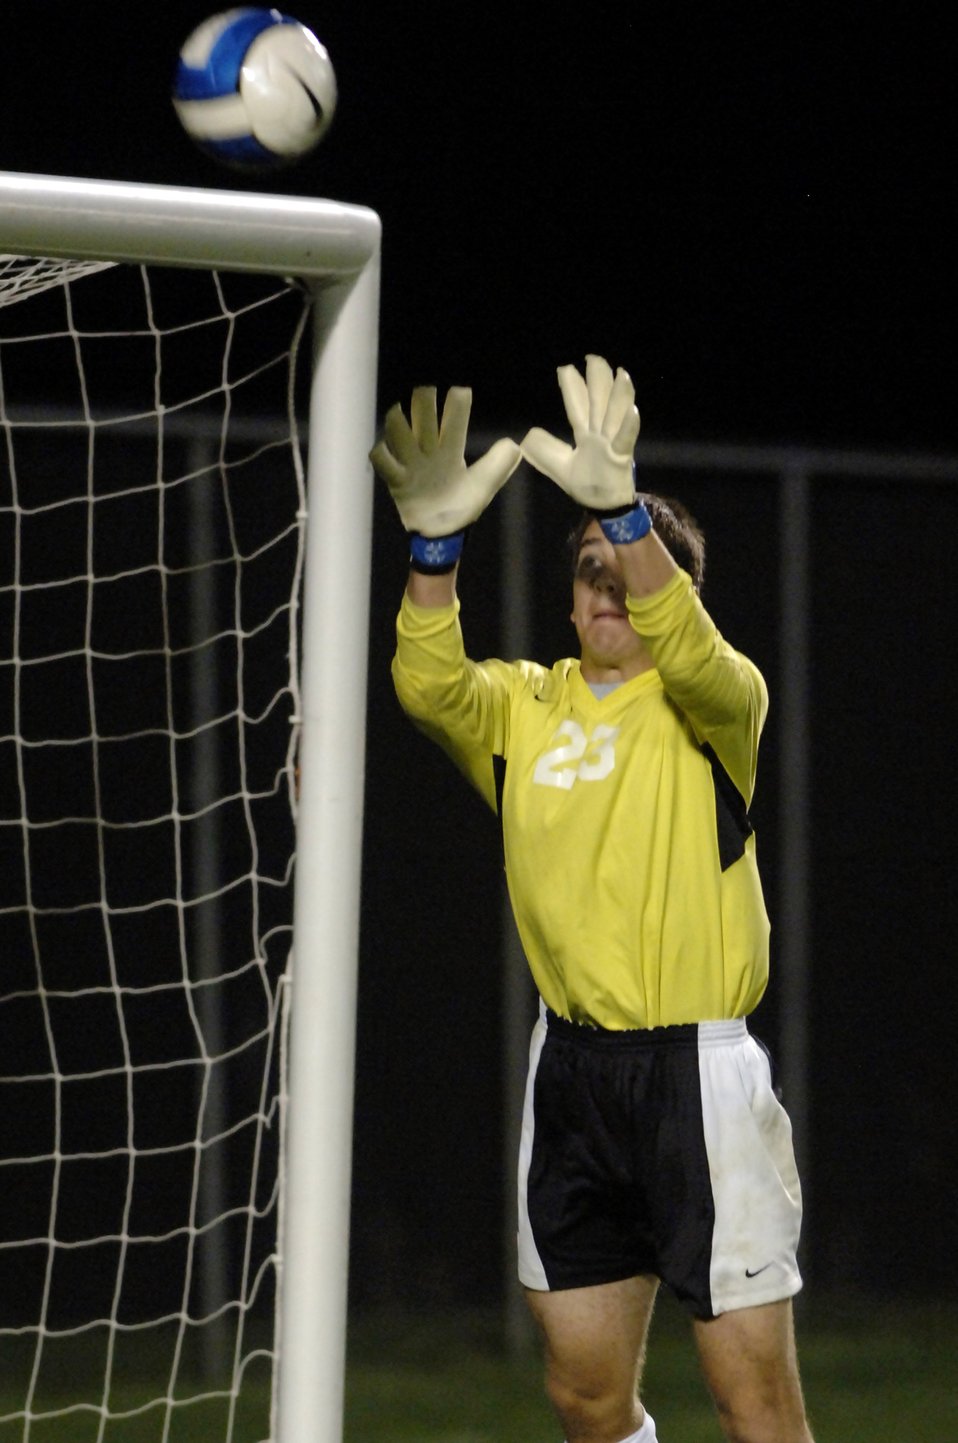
Academy soccer

Cadet 3rd Class Jim Gullo stops a goal shot during a men's exhibition soccer match Aug. 25 against Metropolitan State College of Denver at the U.S. Air Force Academy in Colorado Springs, Colo.